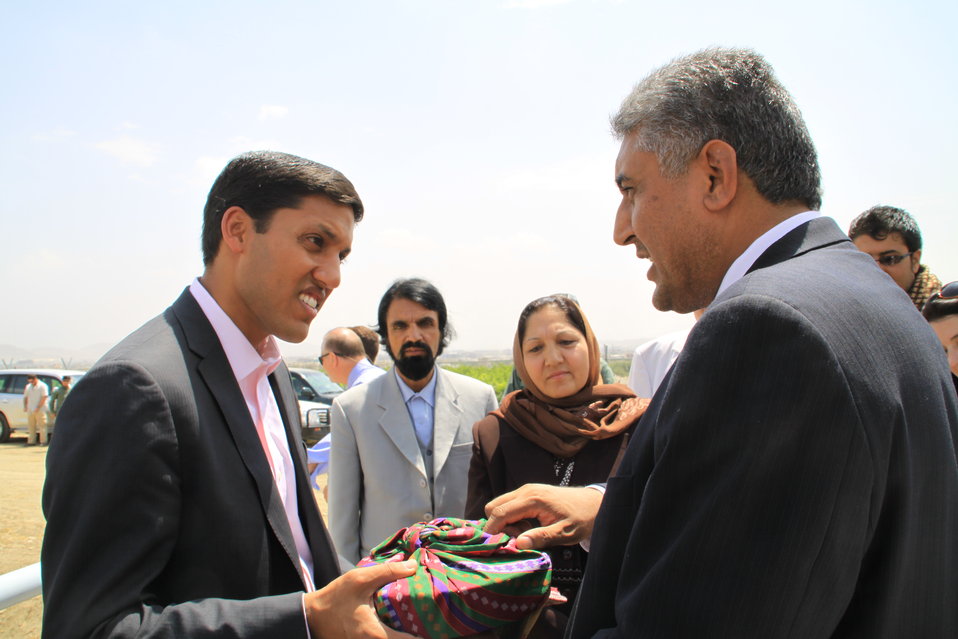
Badam Bagh Farm